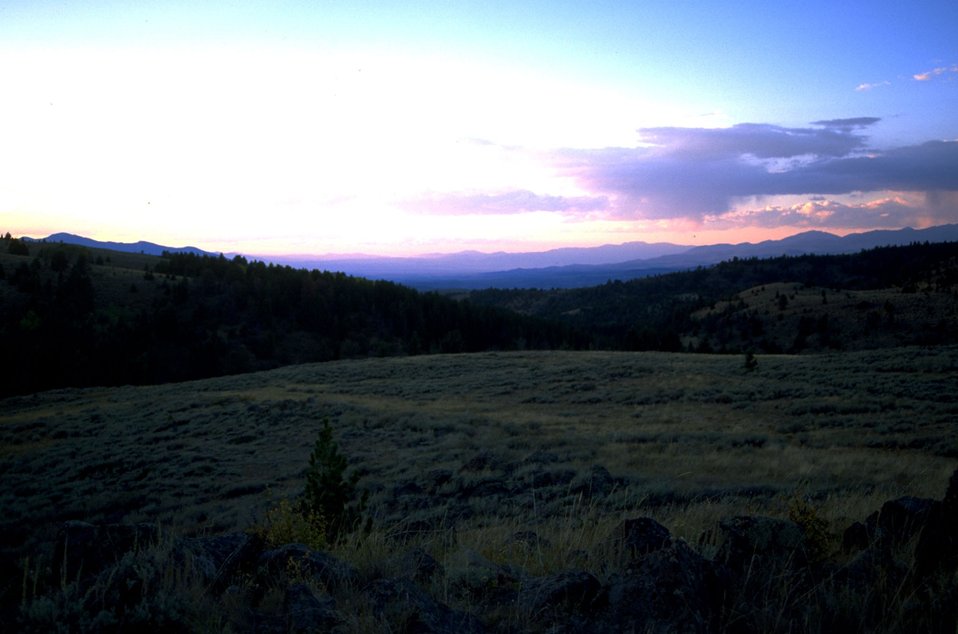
Sunset over a valley